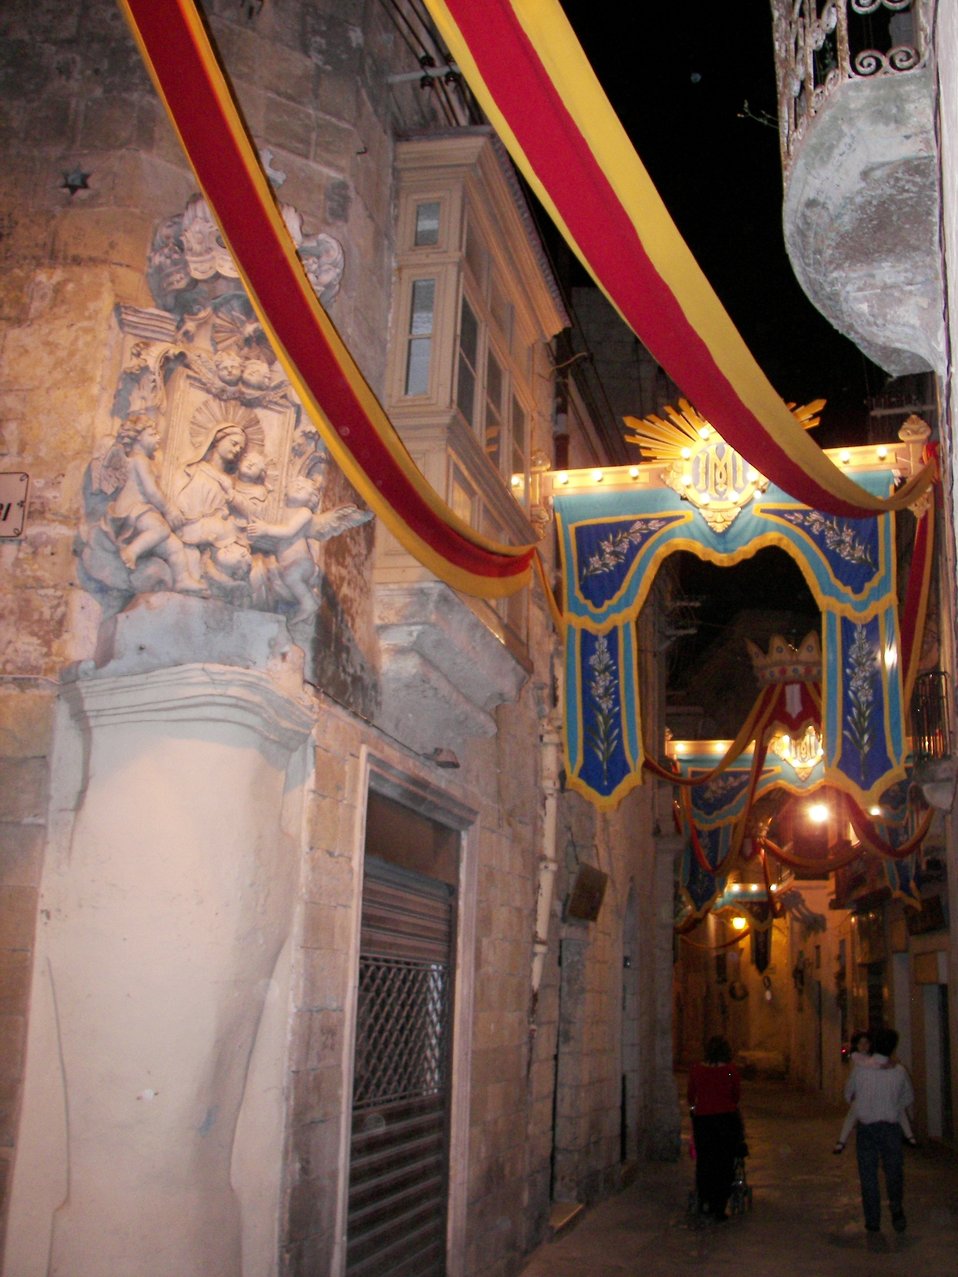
Streets of Rabat during the feast of Saint Joseph Italiano: I caratteristici vicoli di Rabat, decorati in occasione della festa di San Giuseppe